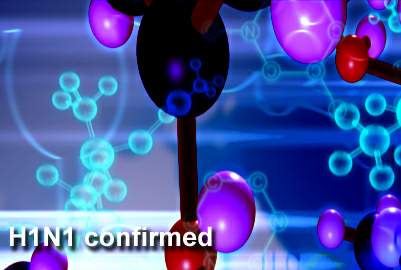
Air Force Academy officials responding to flu cases

The Air Force Academy in Colorado Springs, Colo., is treating approximately 90 cadets with influenza-like illness, or ILI. Tests from Brooks City-Base, Texas, confirmed that 15 cadets in the Class of 2013 have the H1N1 influenza virus.